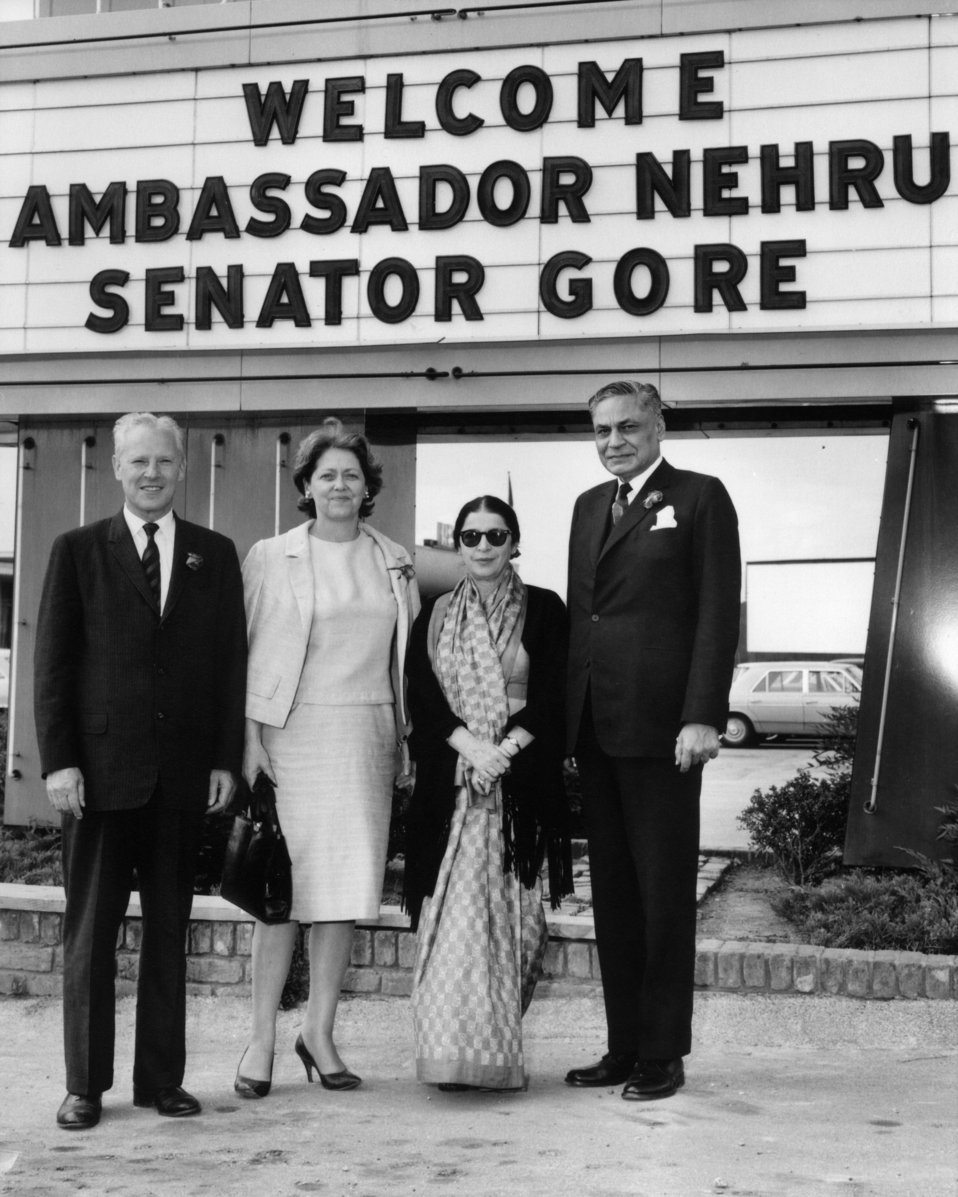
Visits from Ambassador Nehru of India and Senator Gore

63-1166-1 DOE photo by Ed Westcott Left to right Senator Albert Gore, Mrs. Gore, Ambassador and Mrs. B.K. Nehru of India Oak Ridge Tennessee 10-26-1963